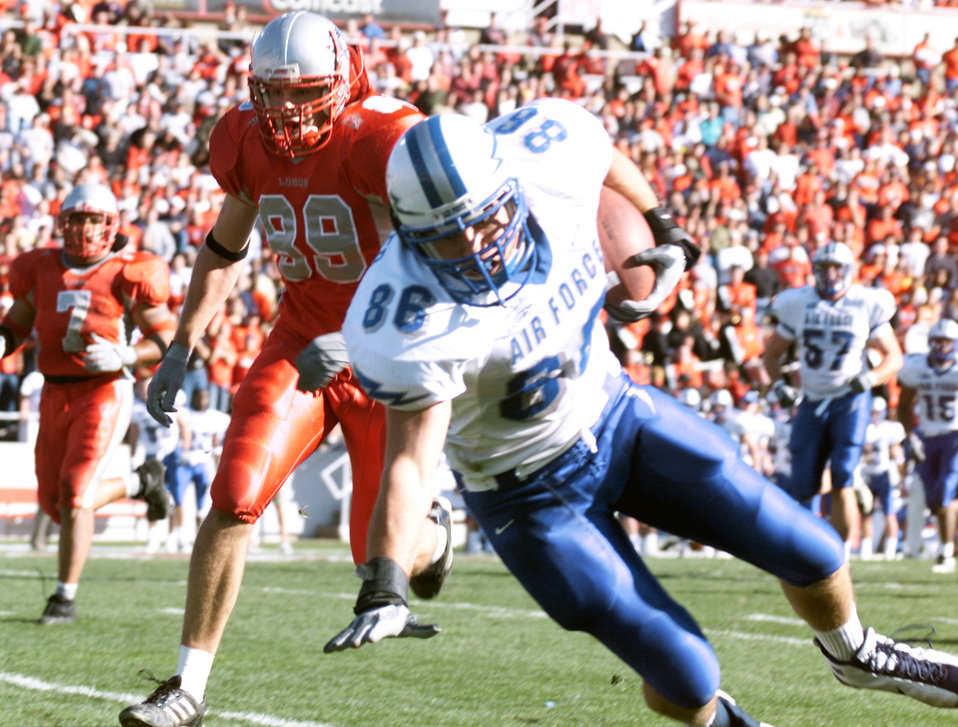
Lobos take Falcons, 24-12

ALBUQUERQUE, N.M. -- Air Force tight end Adam Strecker tries to break his fall, after making an off-balance catch for a 17-yard gain. The senior had four receptions for 55 yards during the Falcons' 24-12 loss to the University of New Mexico Lobos on Nov. 15.